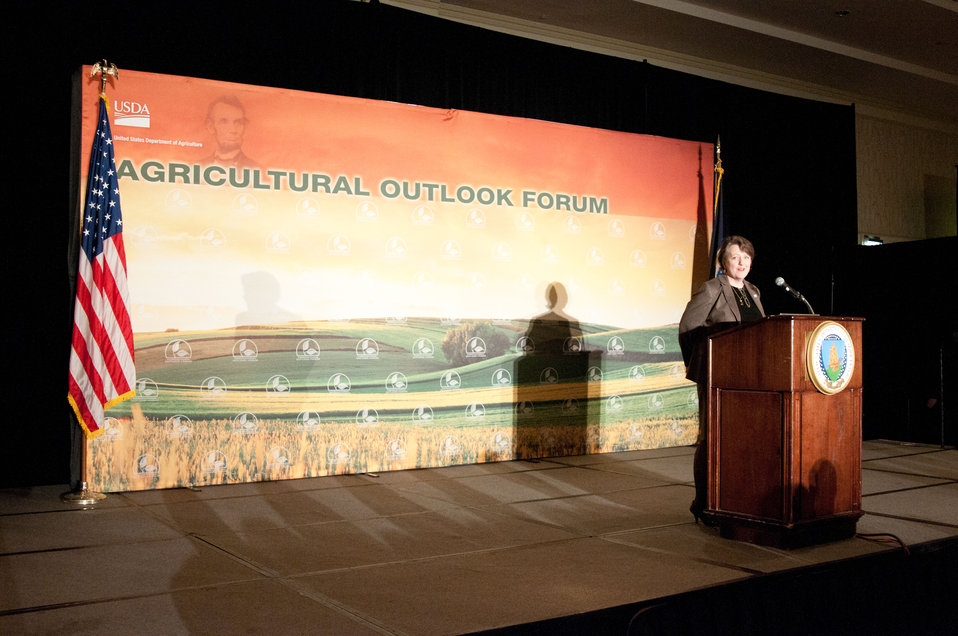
Agriculture Deputy Secretary Kathleen Merrigan makes welcoming remarks at the 2012 Agricultural Outlook Forum, “Moving Agriculture Forward” in Arlington, VA. on Thursday, February 23, 2012.